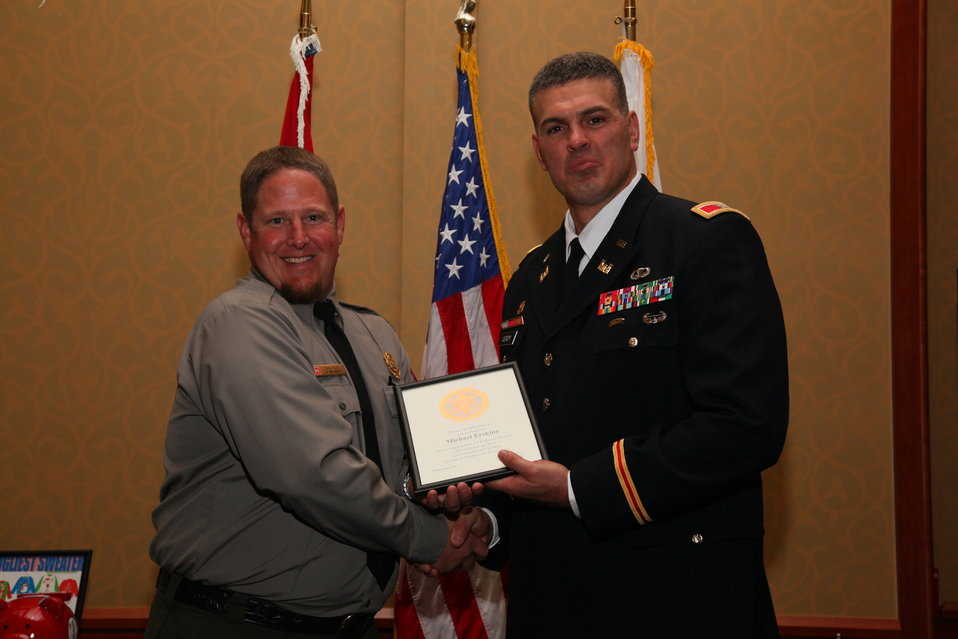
Sacramento District Holiday Party 2011